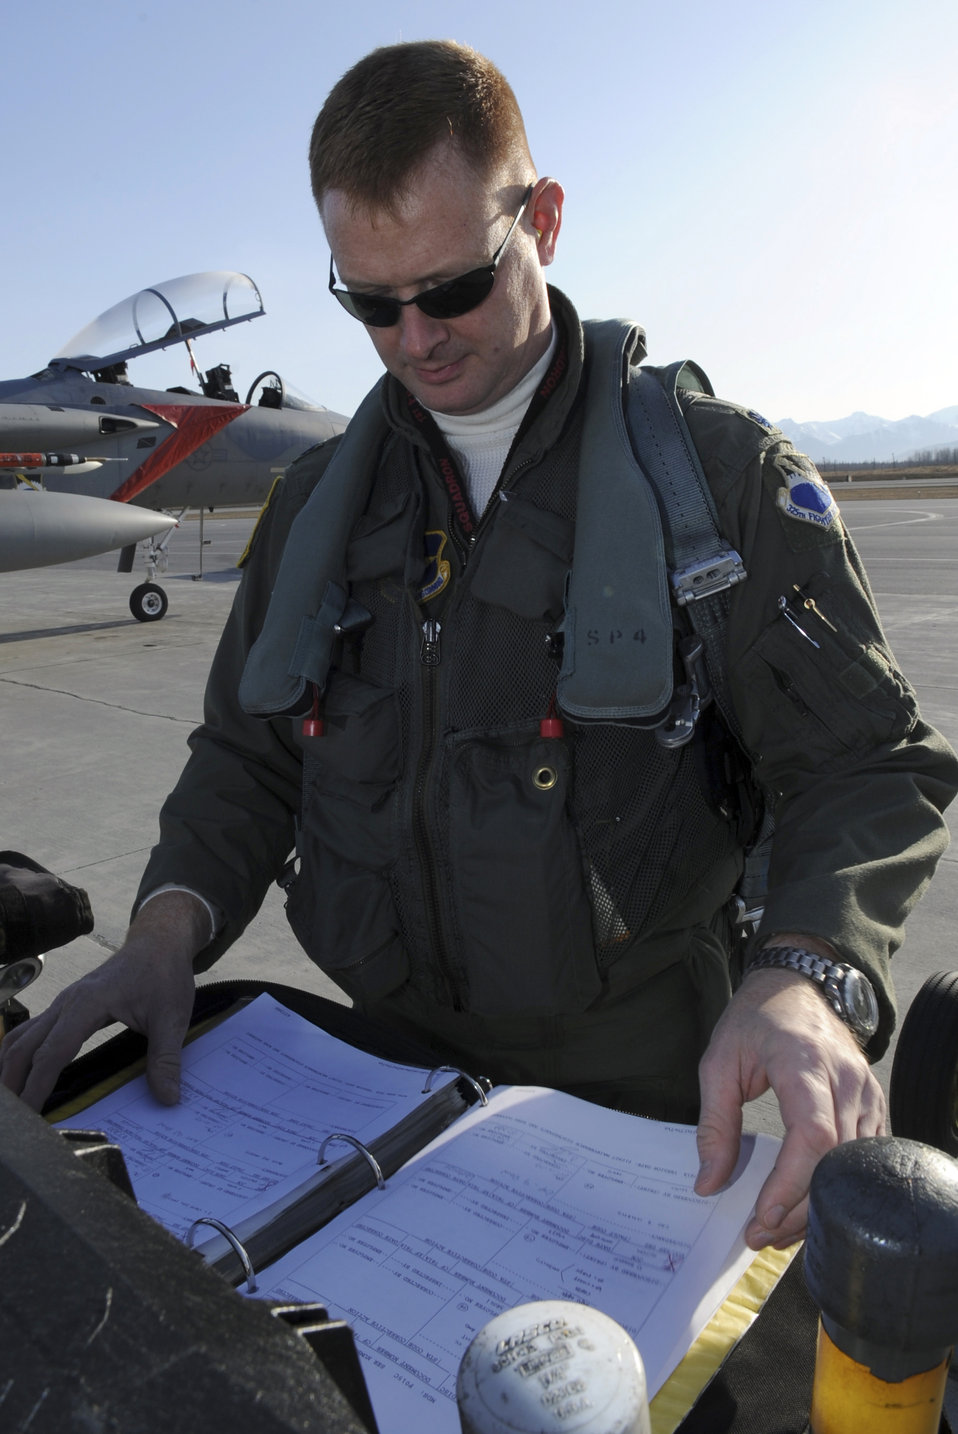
Maintainers keep Red Flag-Alaska jets flying

Lt. Col. Brad Bird, from the 2nd Fighter Squadron at Tyndall Air Force Base, Fla., goes over his preflight checklist prior to taking off from Elmendorf AFB, Alaska, April 28 for a Red Flag-Alaska training mission. This exercise enables flying squadrons to enhance their warfighting capabilities by flying simulated combat sorties in a realistic threat environment.